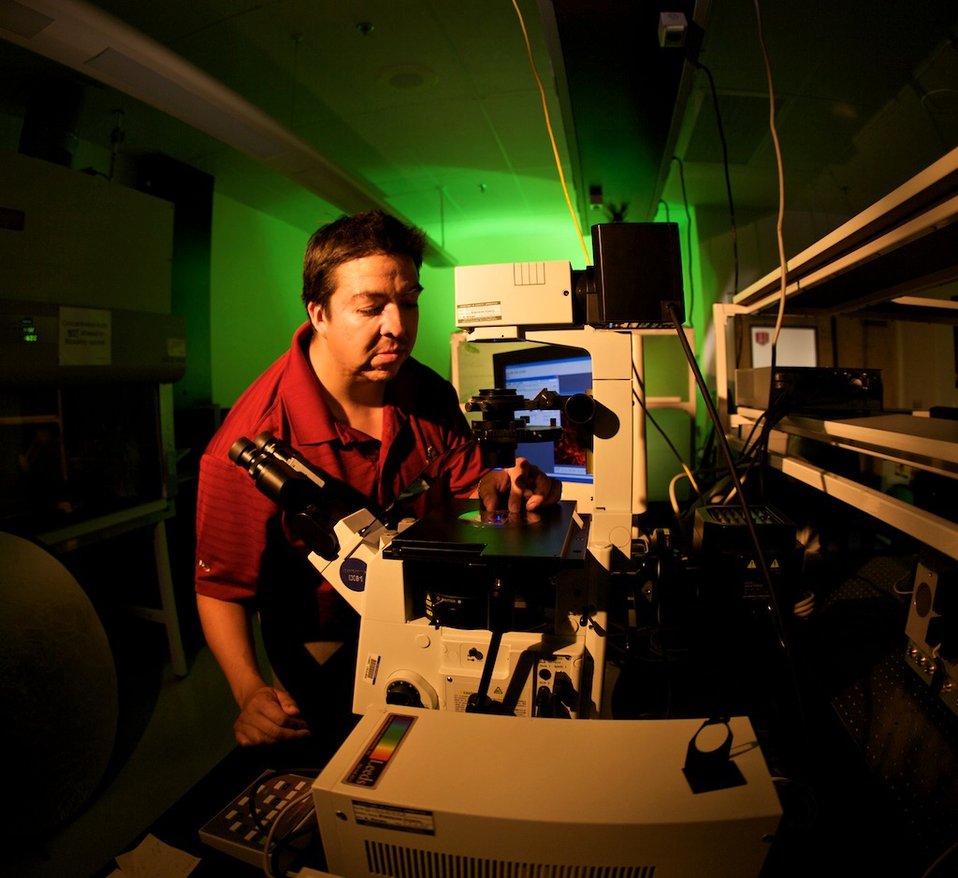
AT CINT, SCIENTISTS LIKE GABRIEL MONTANO PROVIDE INPUT IN THE USE OF INTEGRATED NANOTECHNOLOGY SOLUTIONS TO MEET GLOBAL NEEDS IN SECURITY, ENERGY, AND THE ENVIRONMENT.

CINT is one of five NSRC's throughout the U.S. that form an integrated national program, affiliated with major facilities at the DOE's national laboratories, to cover the diverse aspects of nanoscience and technology. The complex aspires to become a cornerstone of the nation's nanotechnology revolution, contributing to DOE's principle missions in national defense and the environment while providing an invaluable resource for universities and industries. It's core facility in Albuquerque and gateway facilities at Los Alamos and Sandia National Laboratories. CINT provides open aces to tools and expertise needed to explore the continuum from scientific discovery to the integration of nanoscience into the Micro and Marco world.